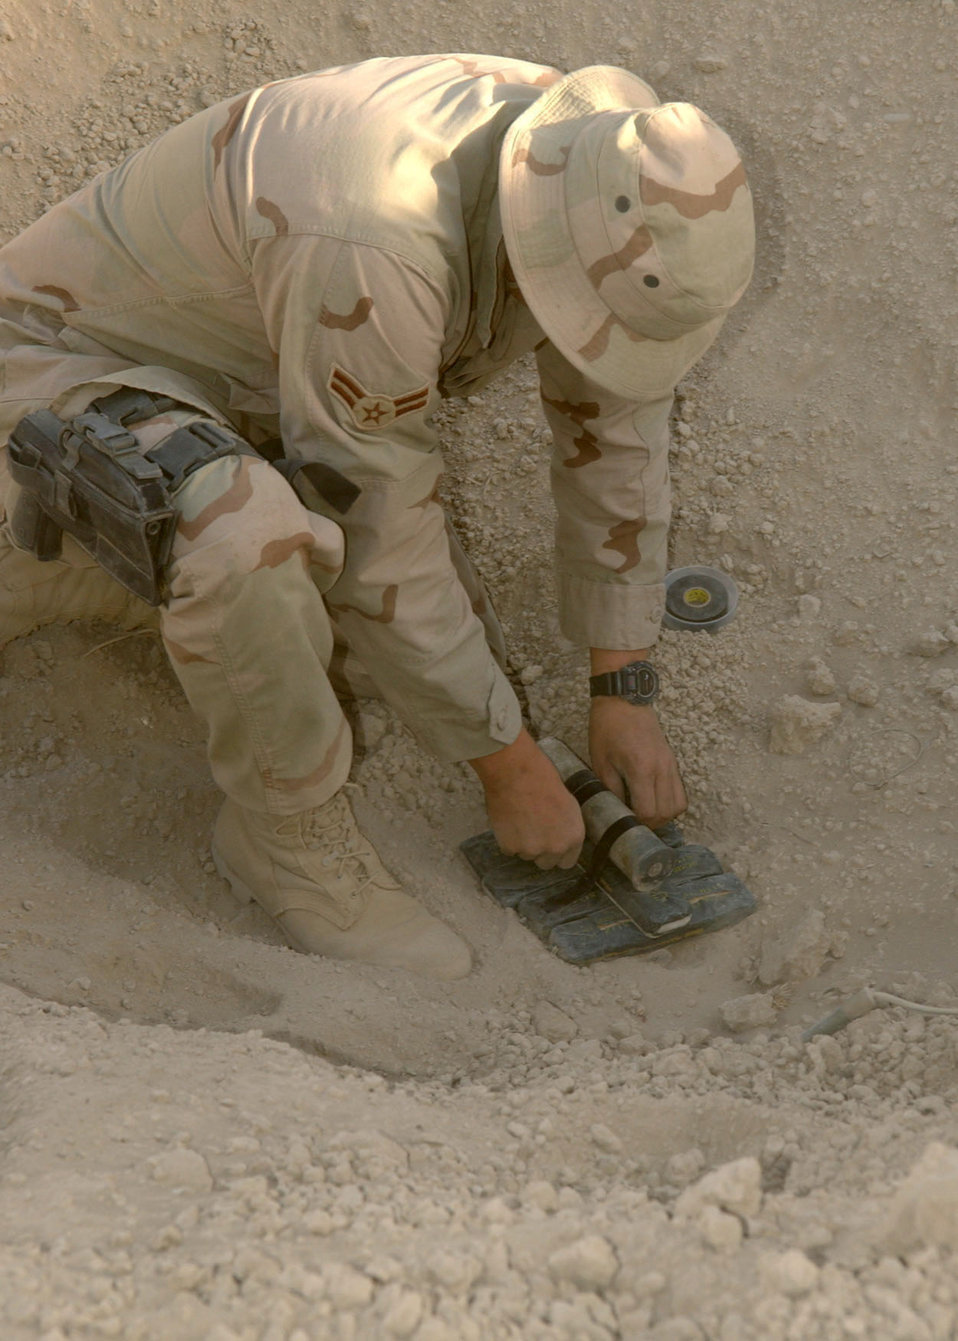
Blowing stuff up for safety's sake

BAGRAM AIR BASE, Afghanistan -- Airman 1st Class Christopher, whose last name is omitted for security reasons, places C-4 on unexploded ordnance. He is an explosive ordnance disposal technician with the 455th Civil Engineer Flight here. Airman Christopher is deployed from Elmendorf Air Force Base, Alaska, supporting Operation Enduring Freedom.